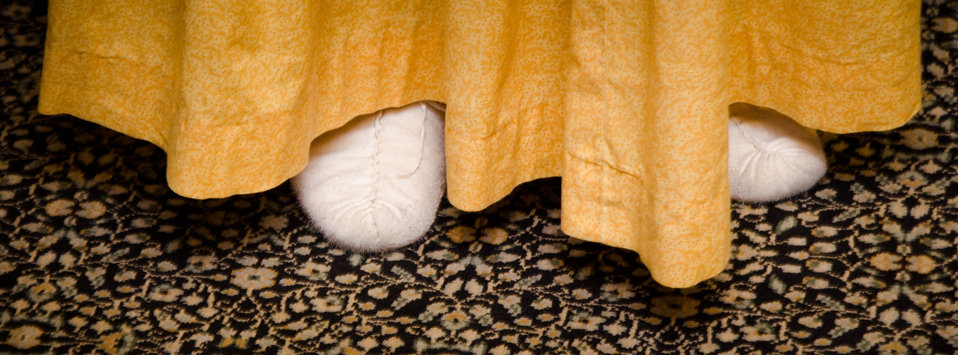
Miss Cherokee 2010-2011 Brooke Hudson's outfit was complete with moccasins, at the U.S. Department of Agriculture in Washington, DC, on Tuesday, August 9, 2011when she met Agriculture Secretary Tom Vilsack,.